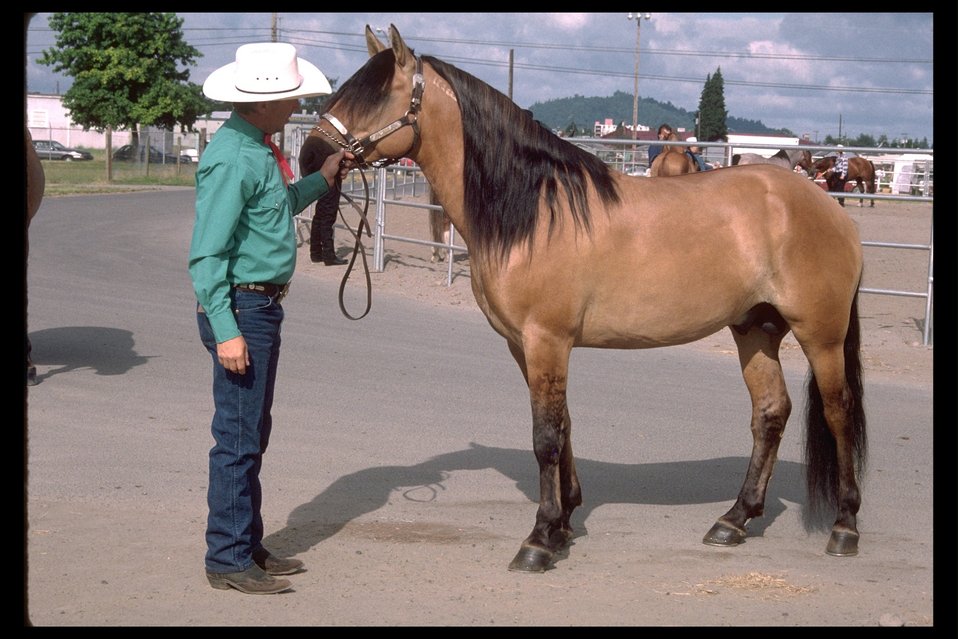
Proud adopter shows off his adopted Kiger Mustang in Longview, WA adoption and horse show.